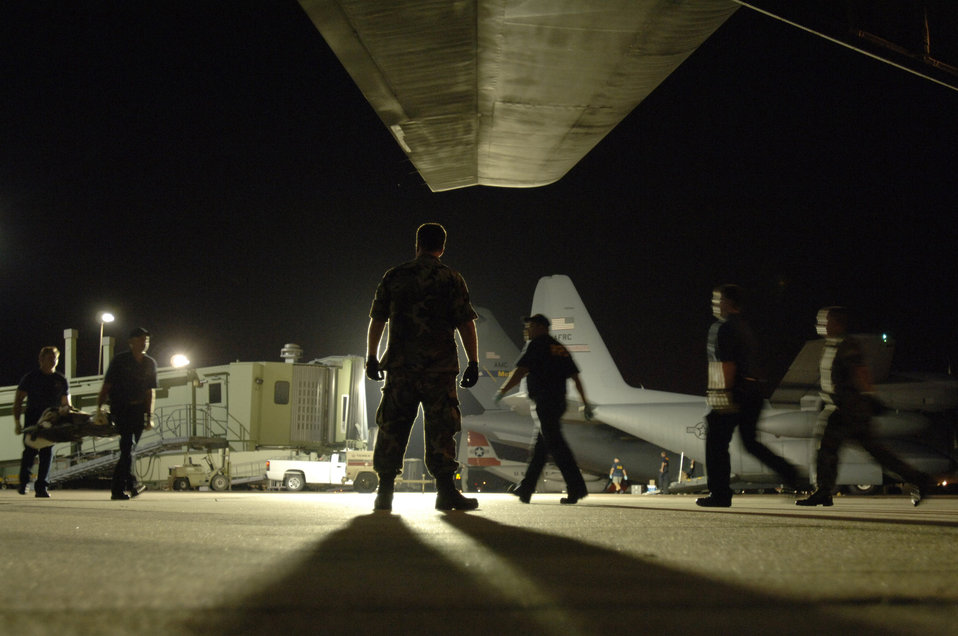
Getting ready for Rita

BEAUMONT, Texas -- Members of the 433rd Aeromedical Evacuation Squadron worked through the night to transport patients to aircraft waiting to airlift them out of the path of Hurricane Rita. The Reserve unit, from Lackland Air Force Base, Texas, also airlifted two mobile staging facilities to Beaumont and to nearby Port Arthur, Texas. In less than a day and a half, they had helped evacuate more than 6,800 people -- 1,306 of them special-needs patients -- to cities in Texas and elsewhere.